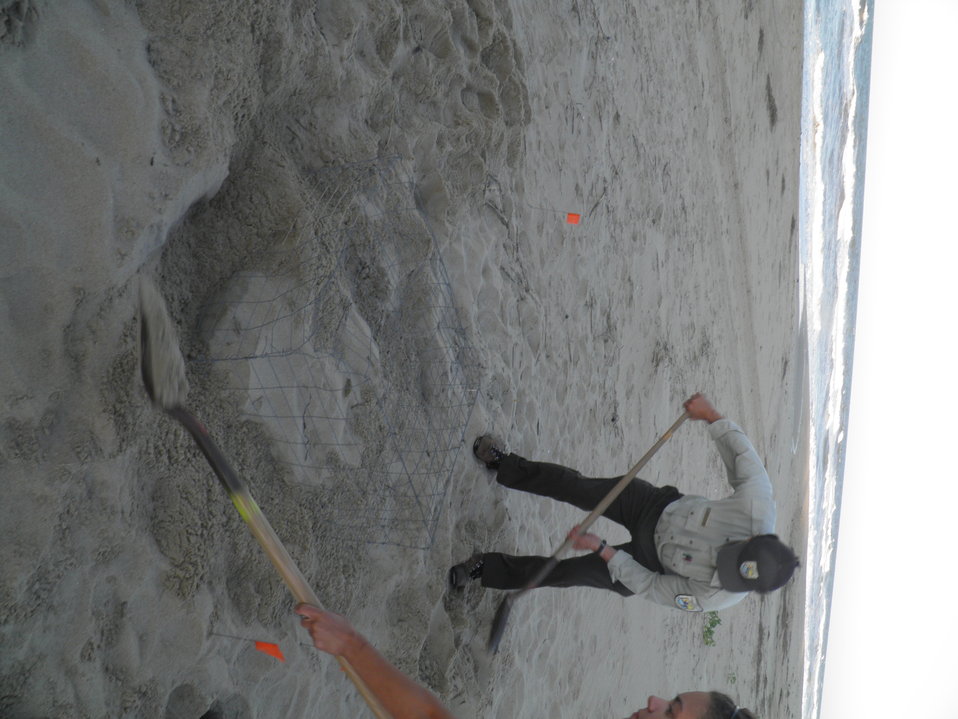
Securing the cage in place.

Credit: USFWS
Crawl 3, Nest 3